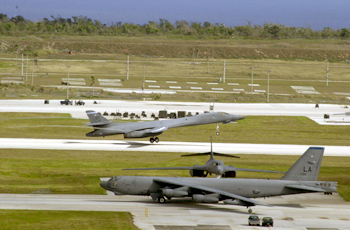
Passing on the runway

ANDERSEN AIR FORCE BASE, Guam -- A B-1B Lancer takes off as a B-52 Stratofortress taxies past, readying for take-off here during last day of surges April 2.